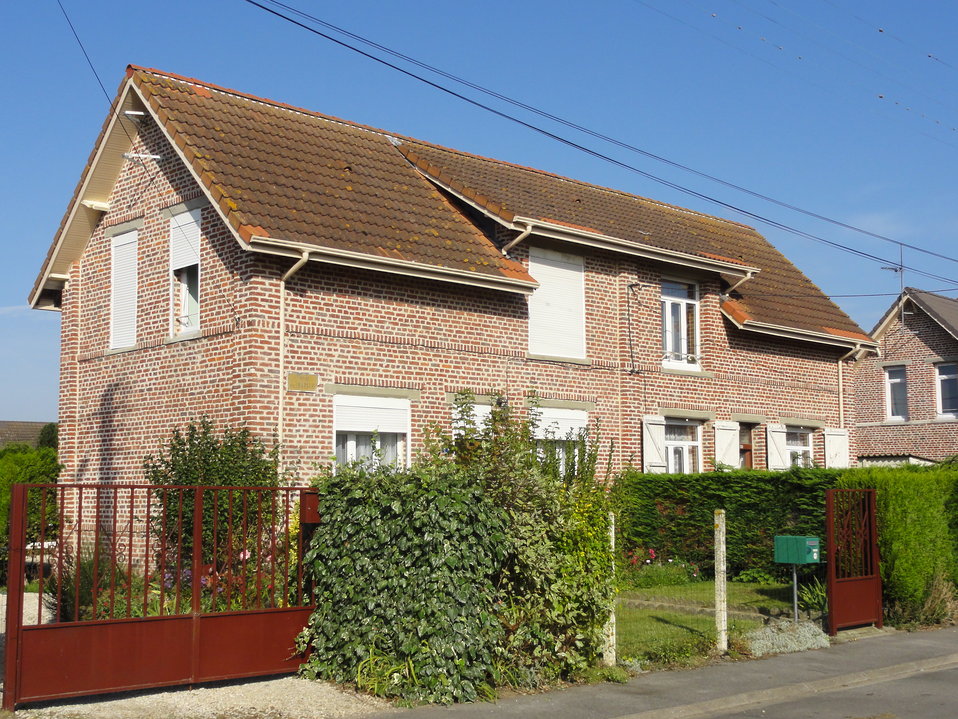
Fran√ßais†: Cit√©s de la Fosse n¬∞ 9 de la Compagnie des mines de B√©thune, Annequin et Sailly-Labourse, Pas-de-Calais, Nord-Pas-de-Calais, France.